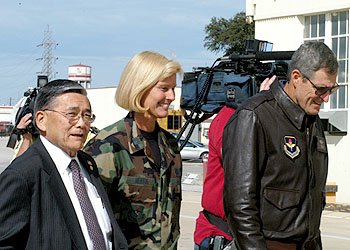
Transportation secretary visits Lackland

Brig.Gen. (Dr.) David G. Young, 59th Medical Wing commander (right) and Brig. Gen. Mary Kay Hertog, 37th Training Wing commander, escort Secretary of Transportation Norman Mineta (left). Mr. Mineta traveled to San Antonio to thank Lackland Air Force Base members for their support of the Hurricane Katrina evacuation